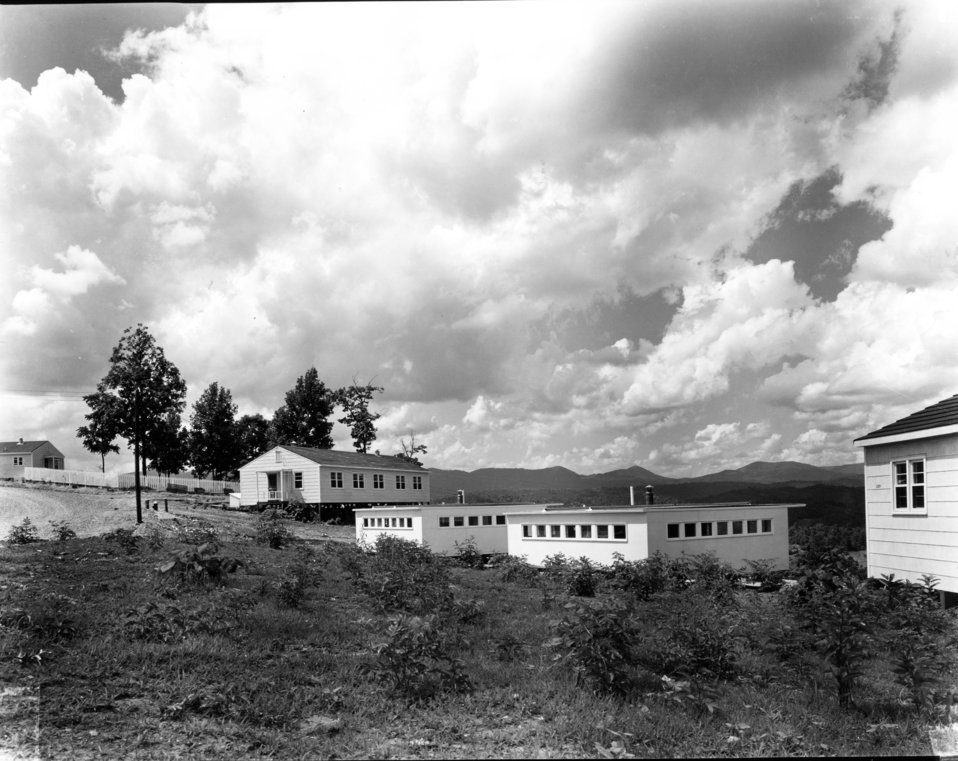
Housing at Oak Ridge